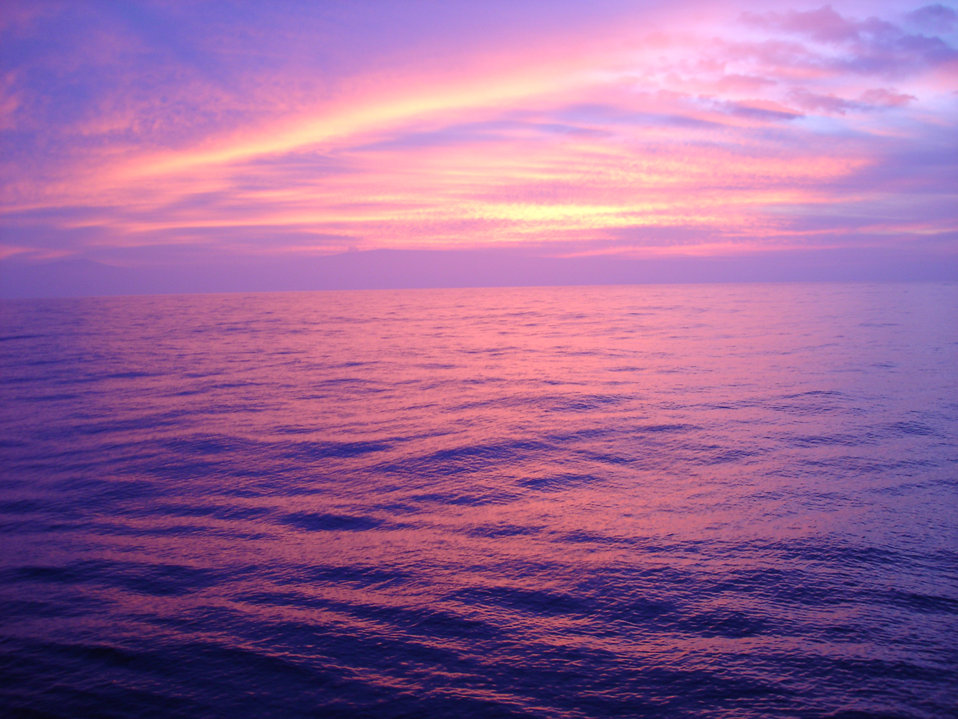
A tropical sunset